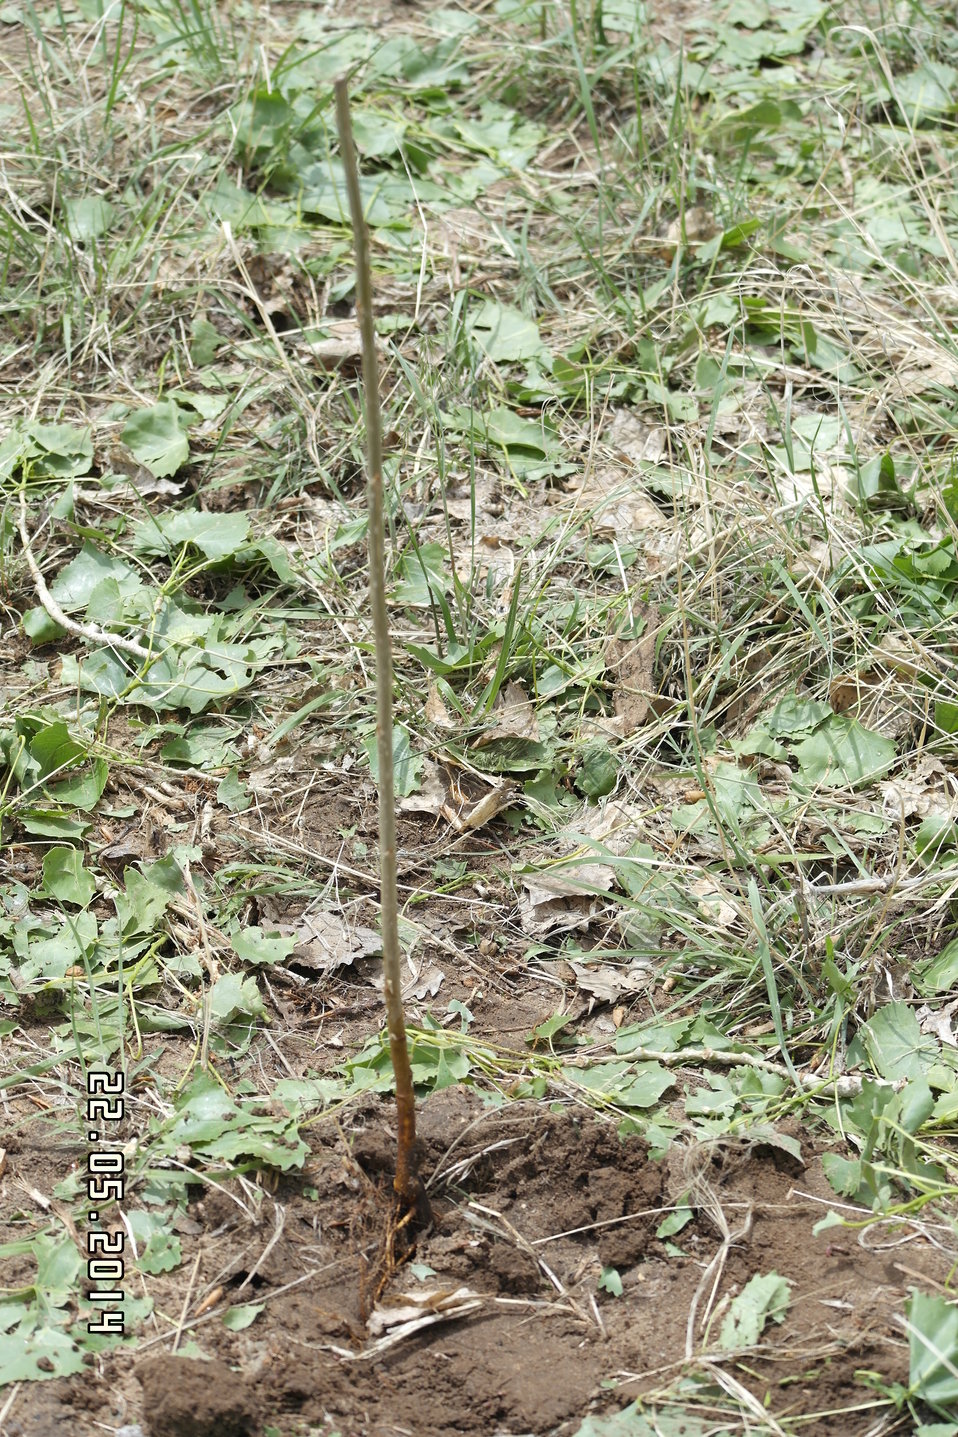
Tree Planting

Jewell made the announcement at an event at Rocky Mountain Arsenal National Wildlife Refuge outside Denver, Colorado, where she was joined by U.S. Department of Agriculture (USDA) Deputy Under Secretary for Natural Resources and the Environment Arthur “Butch” Blazer; Greg Knadle, Vice President for Government Relations of the National Fish and Wildlife Foundation (NFWF); Refuge Manager David Lucas and youth corps members of Groundwork Denver.